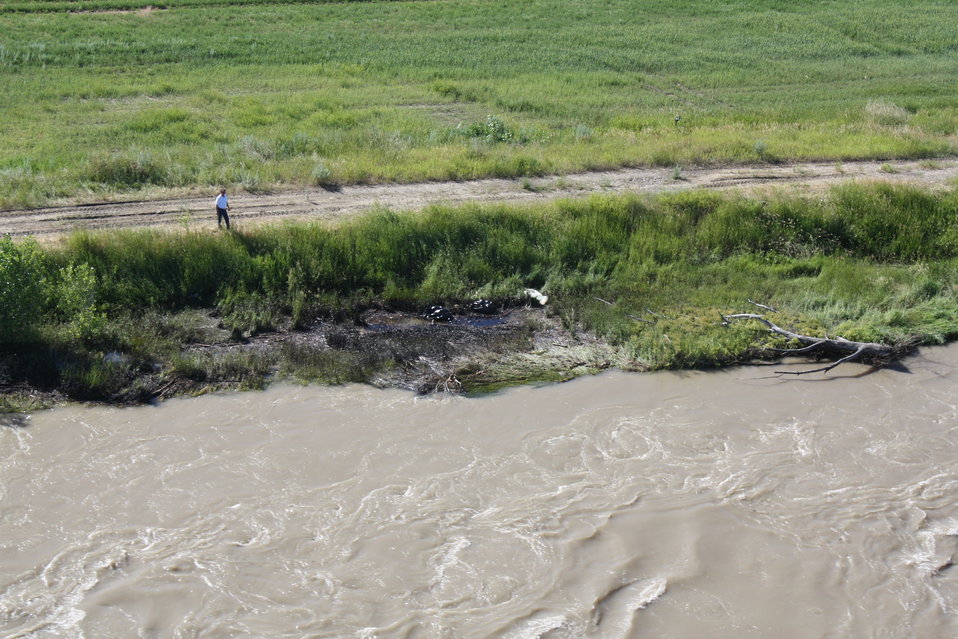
Aerial Wildlife Survey

The U.S. Fish and Wildlife Service conducts daily aerial wildlife surveys to identify, monitor and assess potentially oiled wildlife and their habitats.